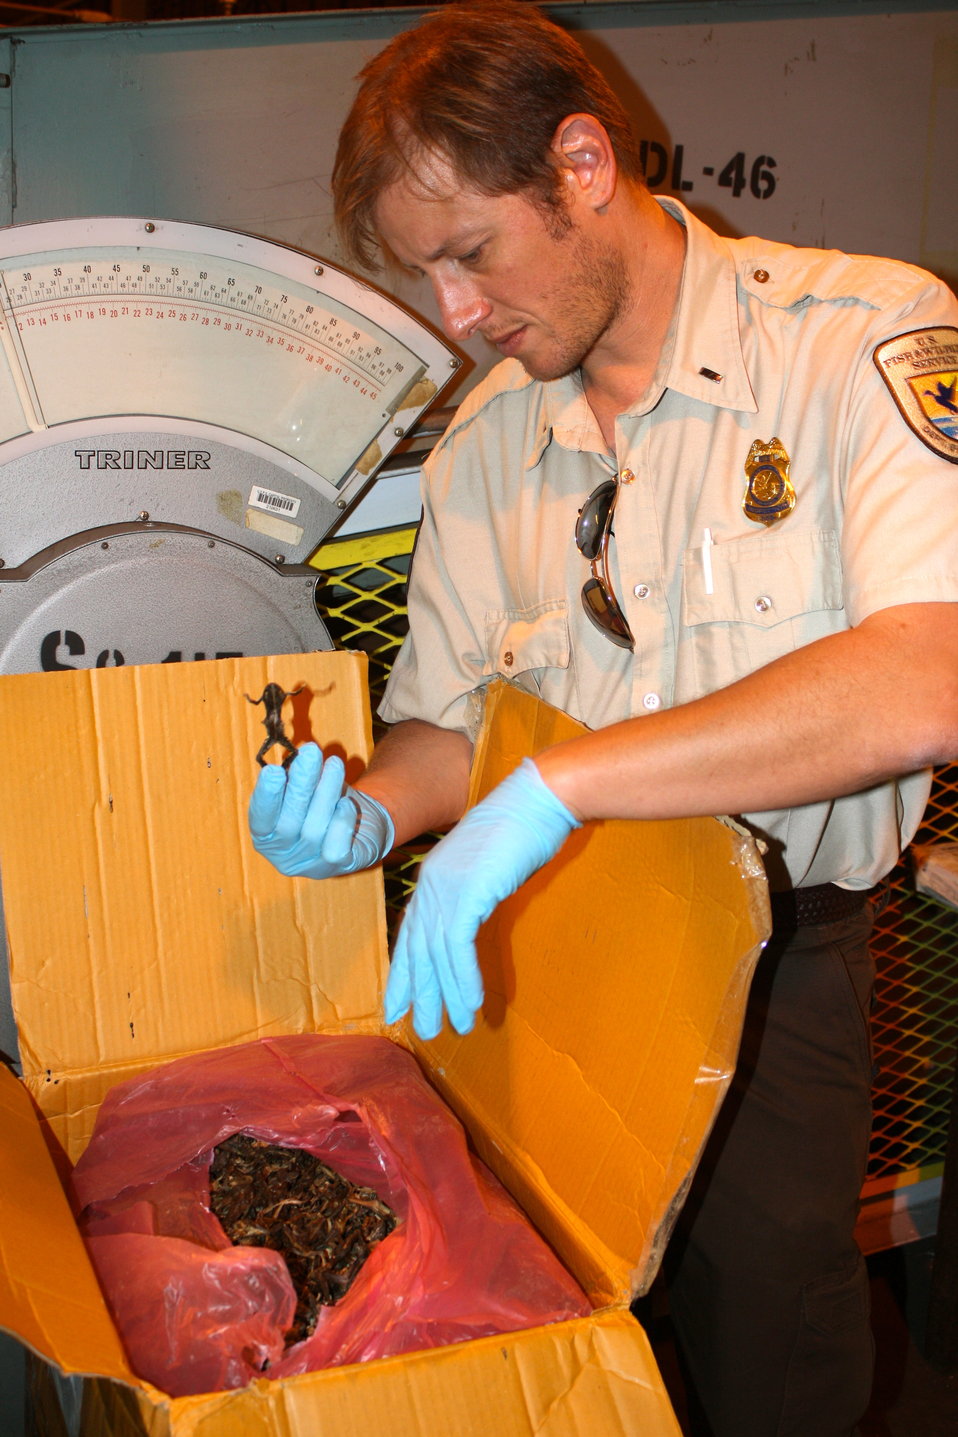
Inspector checks dried frog shipment

Inspector from the Elizabeth, N.J. Office of Law Enforcement checks dried frog shipment.